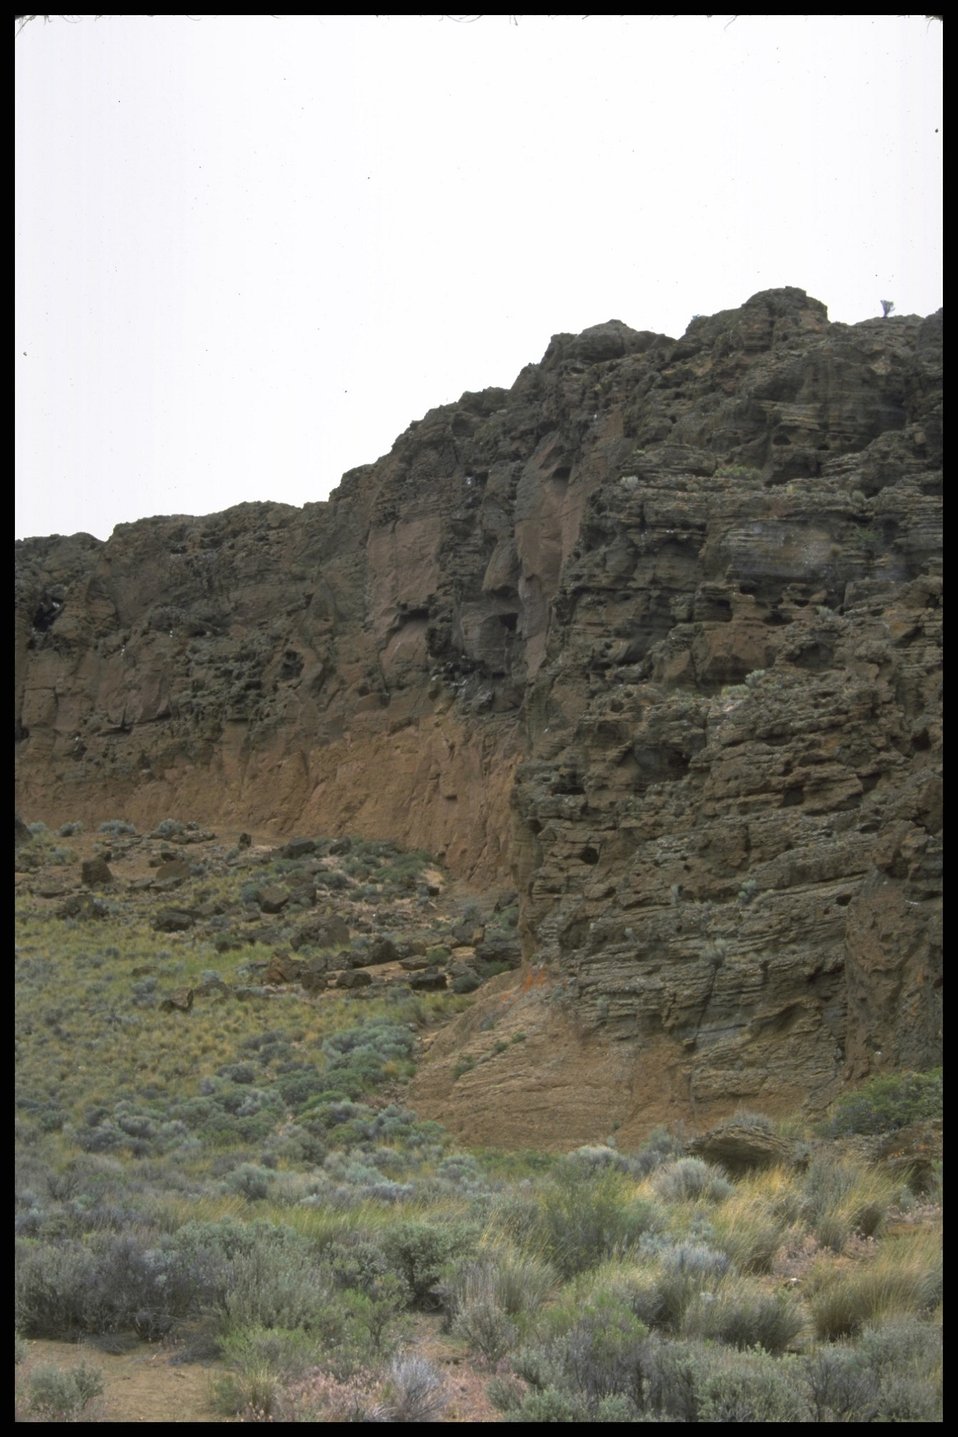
Scenic view, Ft. Rock, Lakeview District.